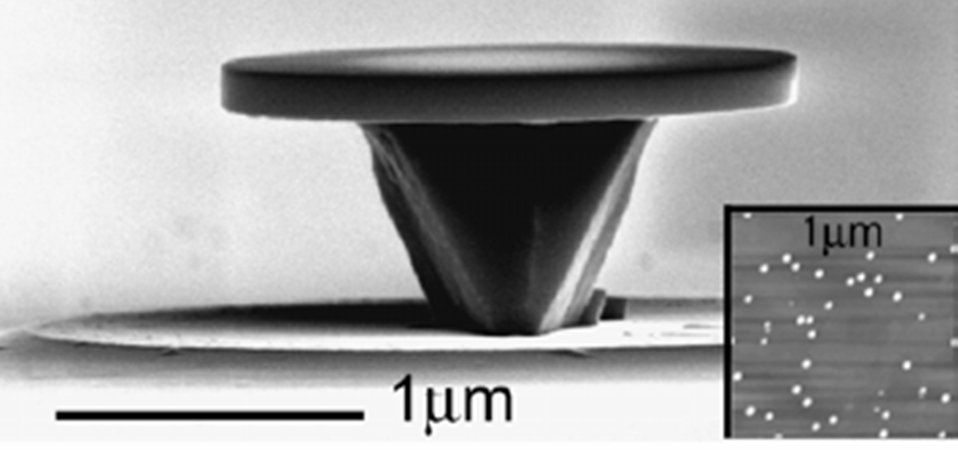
Quantum Dot Lasers. One Dot Makes All the Difference

Microdisk lasers used in experiments by NIST, Stanford University and Northwestern University are made by layering indium arsenide on top of gallium arsenide and etching out disks about 1.8 micrometers across on pillars of gallium arsenide. Scanning tunneling microscope image (inset) shows some of the approximately 130 'quantum dot' islands of indium arsenide in each disk.